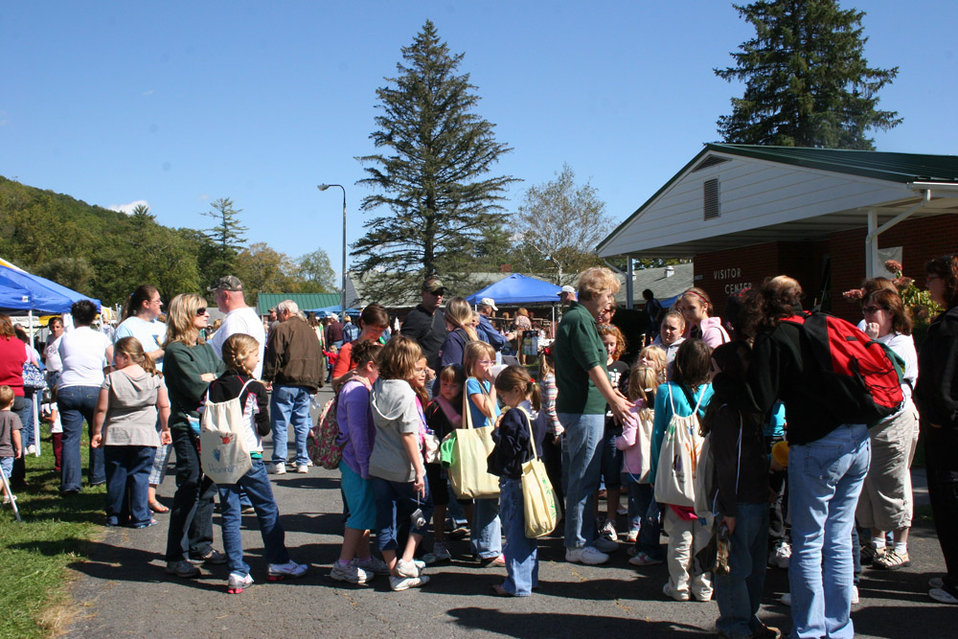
Freshwater Folk Festival

The 5th Annual Freshwater Folk Festival at White Sulphur Springs National Fish Hatchery in West Virginia.Credit: USFWS